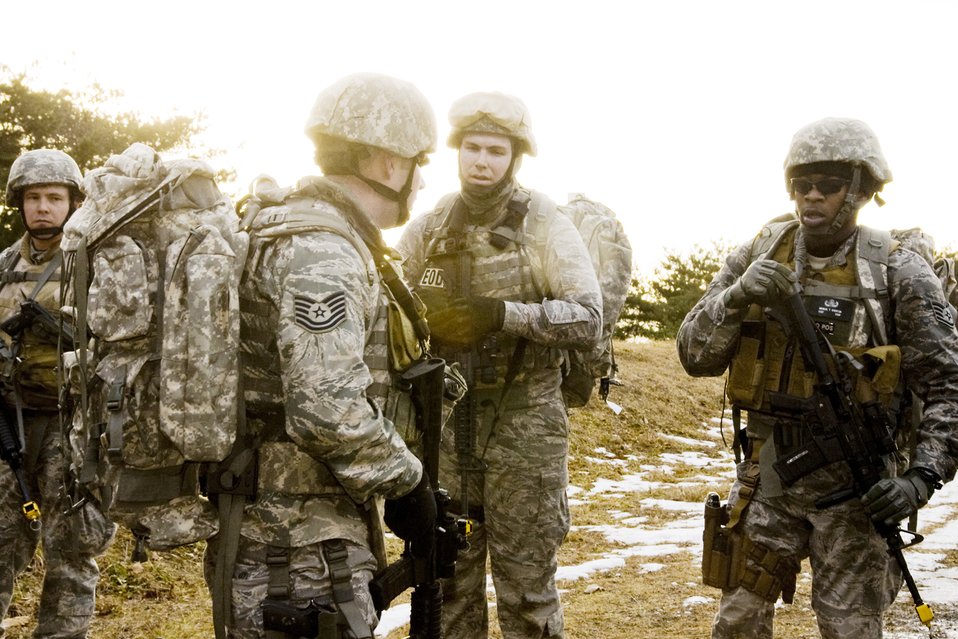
Misawa EOD unit keeps physically fit

Airmen of the 35th Civil Engineer Squadron Explosive Ordnance Disposal flight discuss transition drill tactics during a ruck march Jan. 8, 2010, at Misawa Air Base, Japan. The flight performed numerous drills during the march.